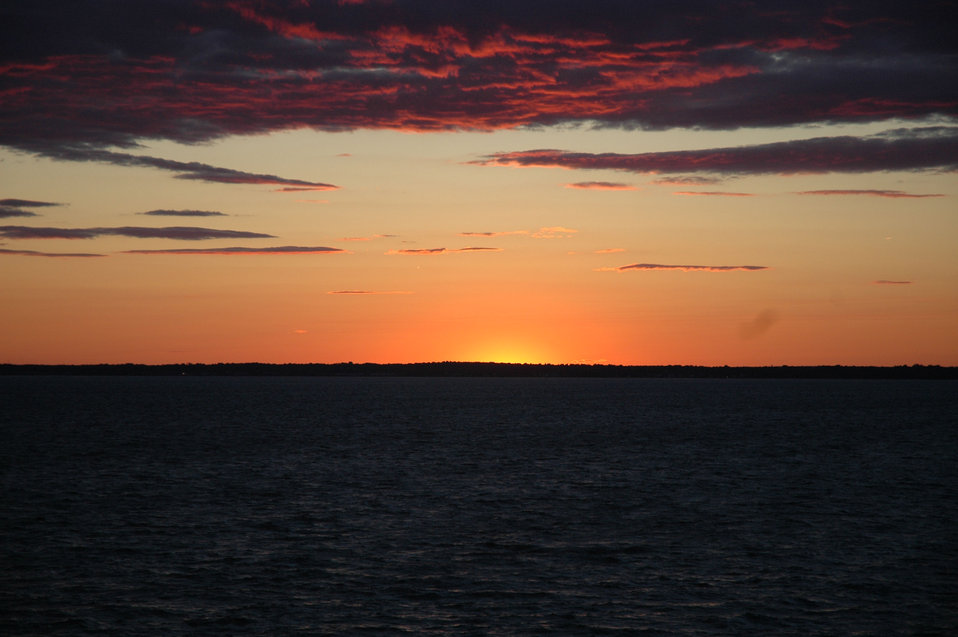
Sunset over Long Island Sound